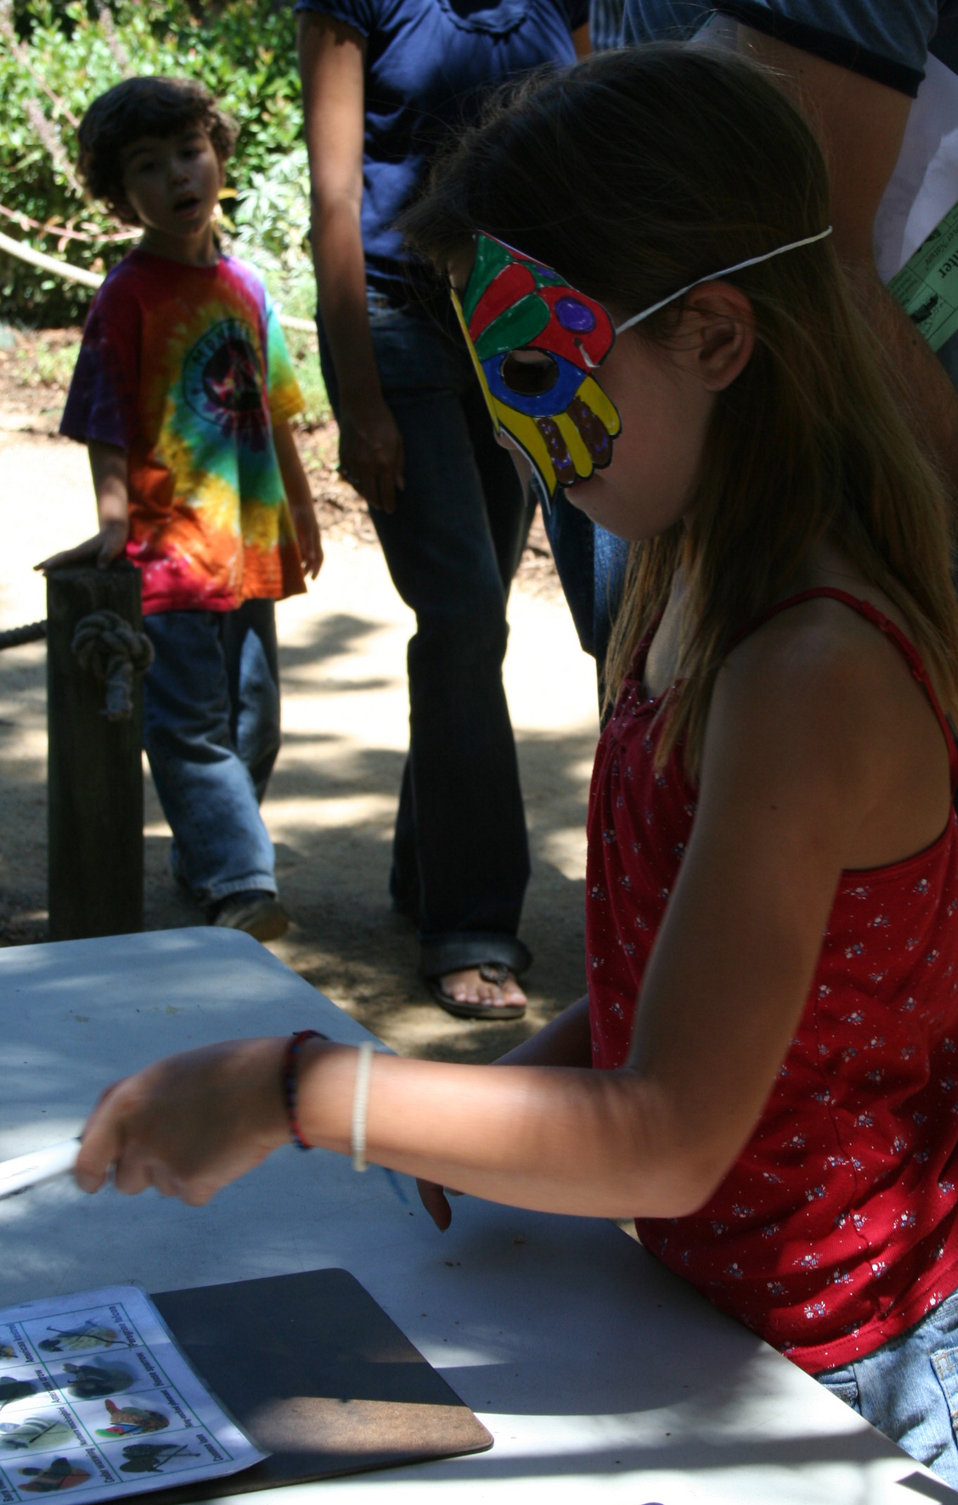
Fairgoer tries her hand at bird bingo

For the first time DOI agencies [US Fish and Wildlife Service, Bureau of Reclamation and Bureau of Land Management] joined together to host an America's Great Outdoors Booth at the California State Fair in Sacramento, Calif., July 14 - 31.

The booth included informational panels and displays as well as a children's activity area. Activities: wildlife masks, temporary tattoos, water-cycle bracelets, fish prints, touch boxes, scat bingo, a green-screen, coloring and bird bingo. Five days a week live raptors, snakes and bats were brought in. About 50,000 children visitied the booth during the 18-day fair.